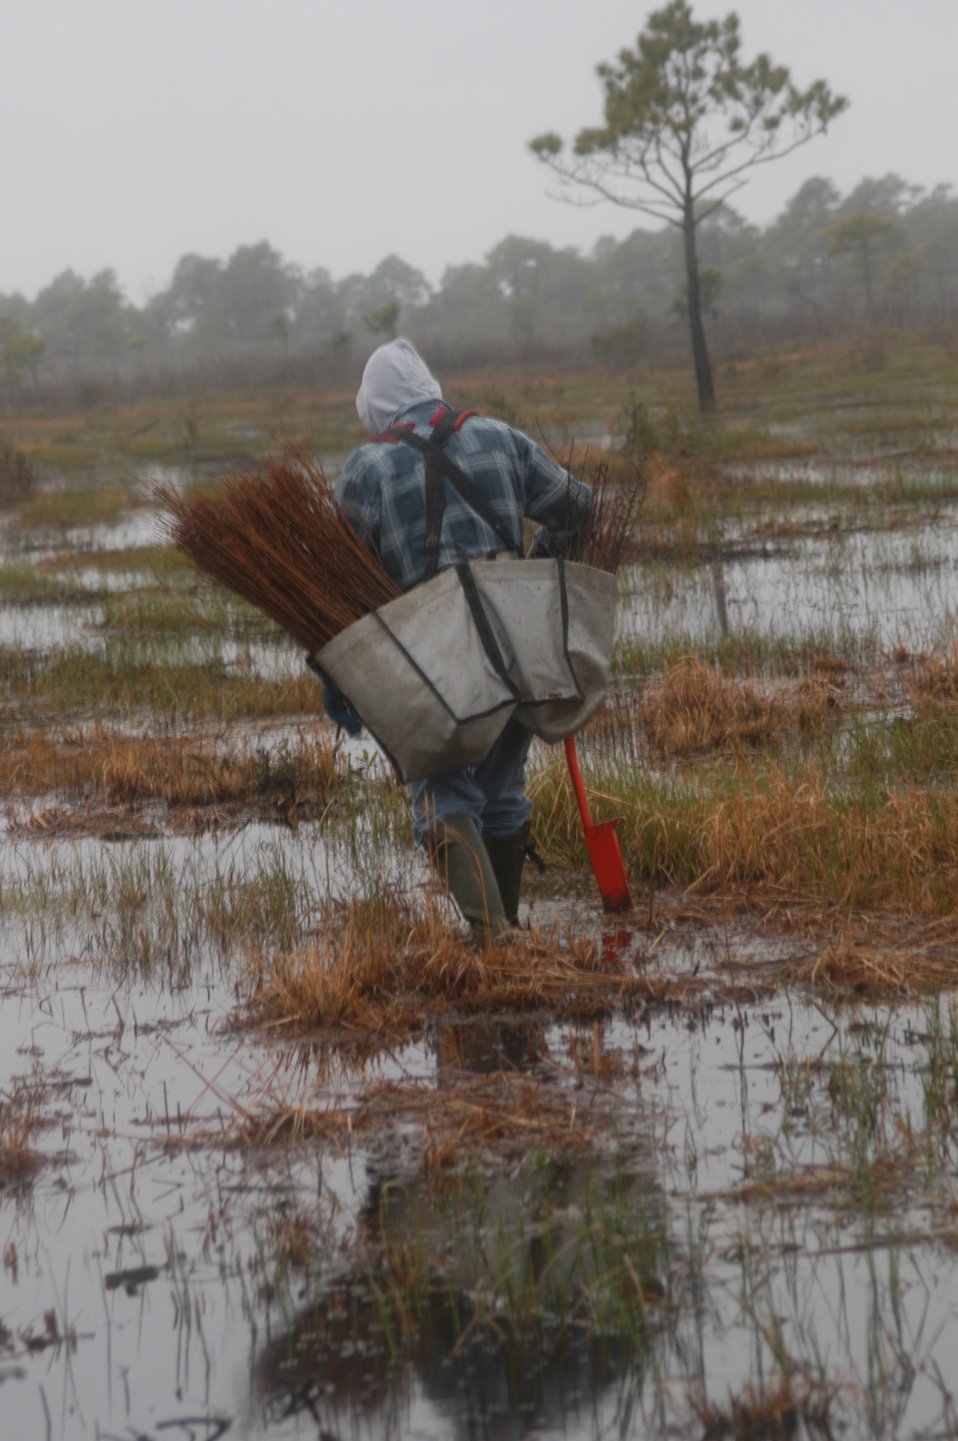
Planting trees

As part of The Nature Conservancy’s Albemarle Climate Change Adaptation Project on Alligator River National Wildlife Refuge, crews planted 20,000 trees, including bald cypress, black gum and pond pine trees. The project will keep track of which trees fare the best in changing conditions.